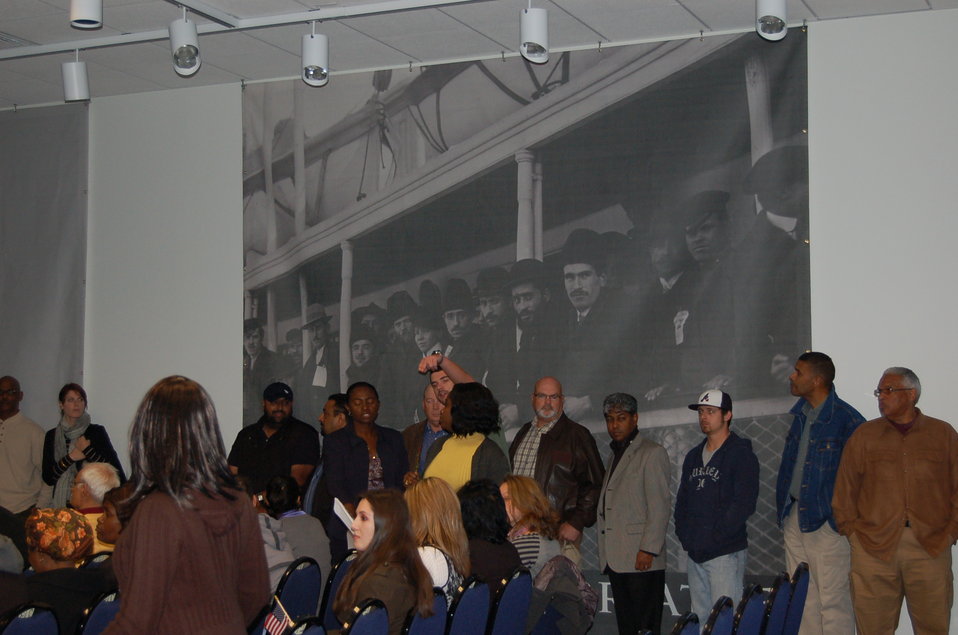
Naturalization Ceremony